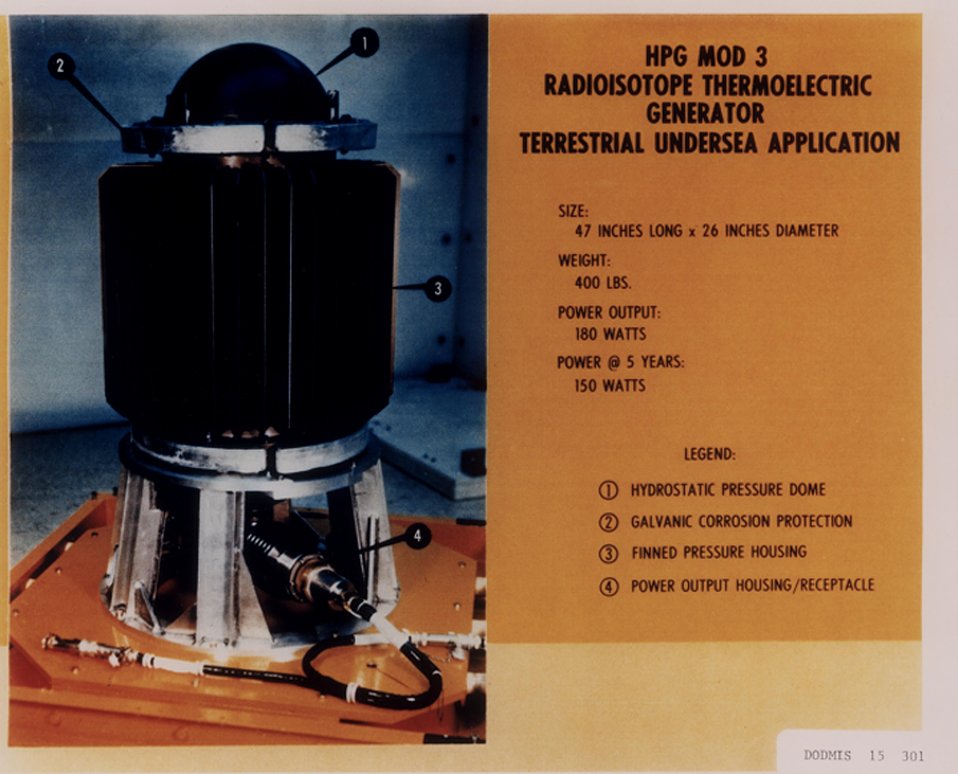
HPG MOD 3 Radioisotope thermometric generator terrestrial undersea application.